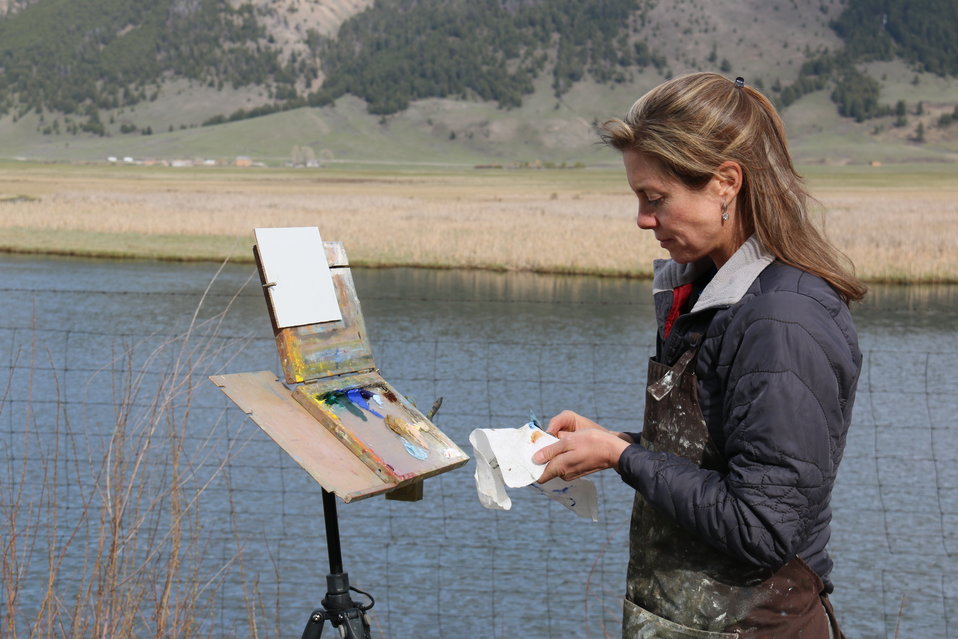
Plein Air Painting

'En plein air' is a French expression which means 'in the open air' and is used to describe painting done in an outdoor setting. Here, Kathryn Turner prepares her paints for an afternoon session along Flat Creek.